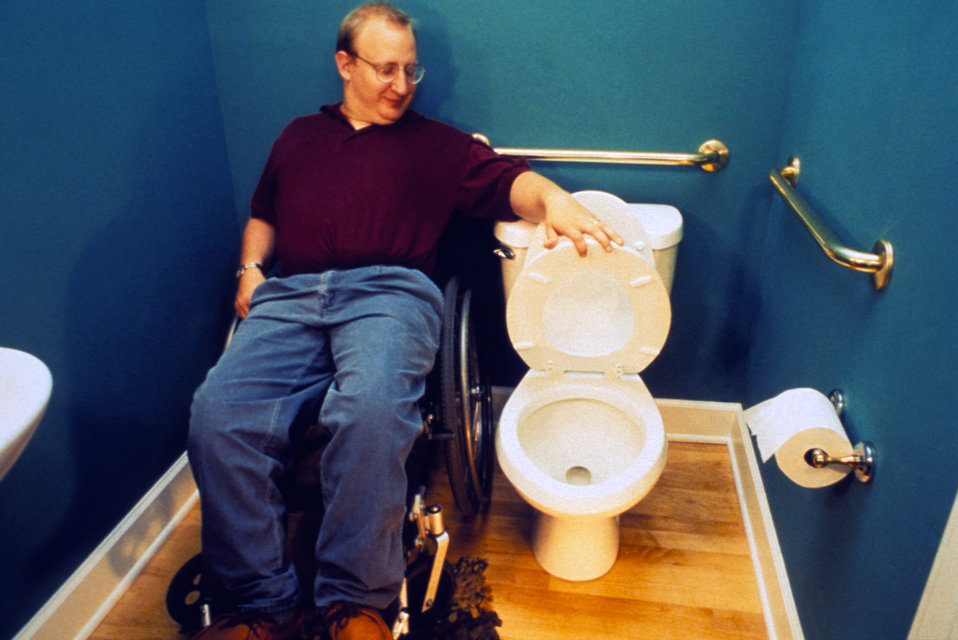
This 1995 image depicted a mobility-challenged man who was sitting in a wheelchair next to a toilet inside a residential, two-fixture bathroom. The design of the bathroom offered enough space to maneuver in a wheelchair, and offered choices of how someone might transfer onto the toilet. The bathroom walls were a dark green color, offsetting brass finished grab bars, and accessories. By designing this restroom to accommodate those with mobility impairments, the overall design became even more accommodating to all, which is really the challenge, and the goal of a universally designed facility.